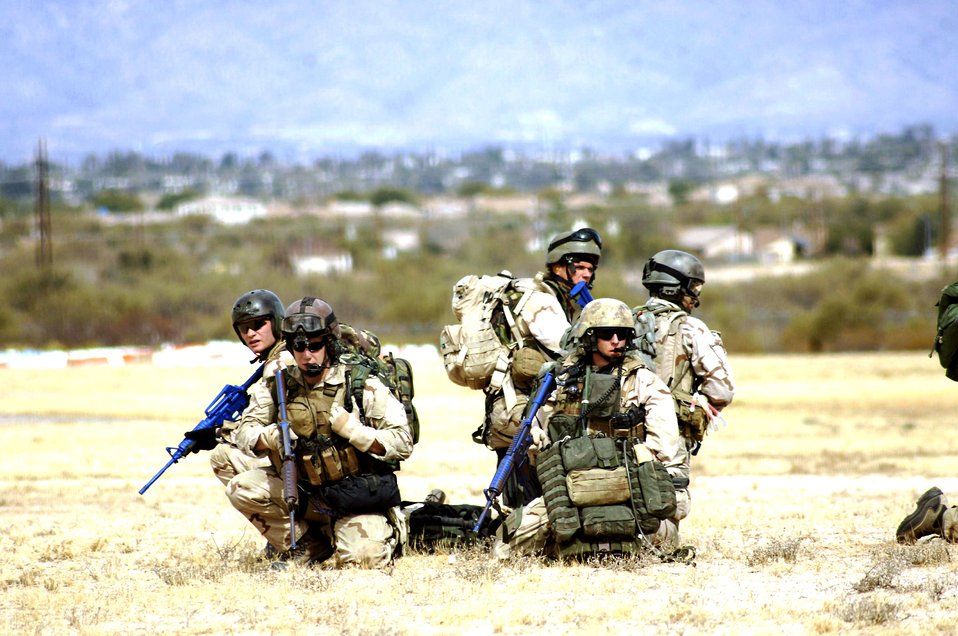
Joint exercise

DAVIS-MONTHAN AIR FORCE BASE, Ariz. (AFPN) -- Pararescuemen, combat rescue officers and the Dutch Army secure the area during a joint US - Dutch mass casualty exercise Feb. 14. The scenario involved a simulated shoot-down of a C-141 Starlifter by a missile. The pararescuemen are with the 48th Rescue Squadron.